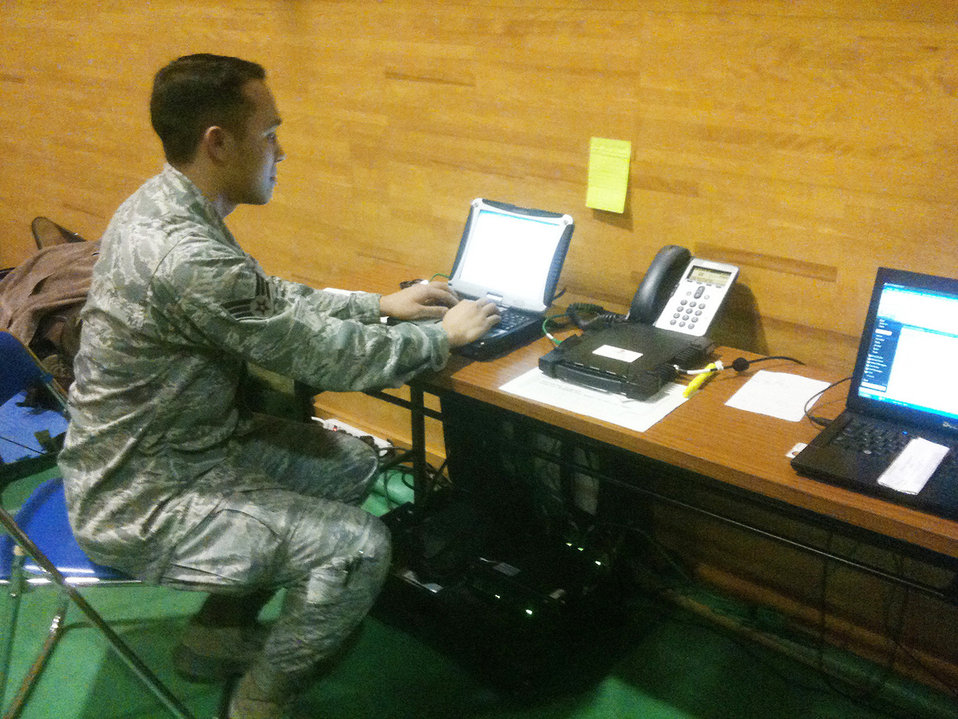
Air Force special operations Airman supports USMC units

Senior Airman Adam Colby sets up a laptop to a special operations forces high-speed agile reachback kit March 20, 2011, at Yamagata Airport, Japan. The SHARK is a tactical communications kit capable of providing multiple security level voice, video and data regardless of IP input method. Airman Colby is providing the only communications support for more than 60 Marines from the 3rd Marine Expeditionary Force deployed manning a forward arming and refueling point here. Airman Colby is a special operations tactical communications specialist from the 353rd Special Operations Support Squadron.